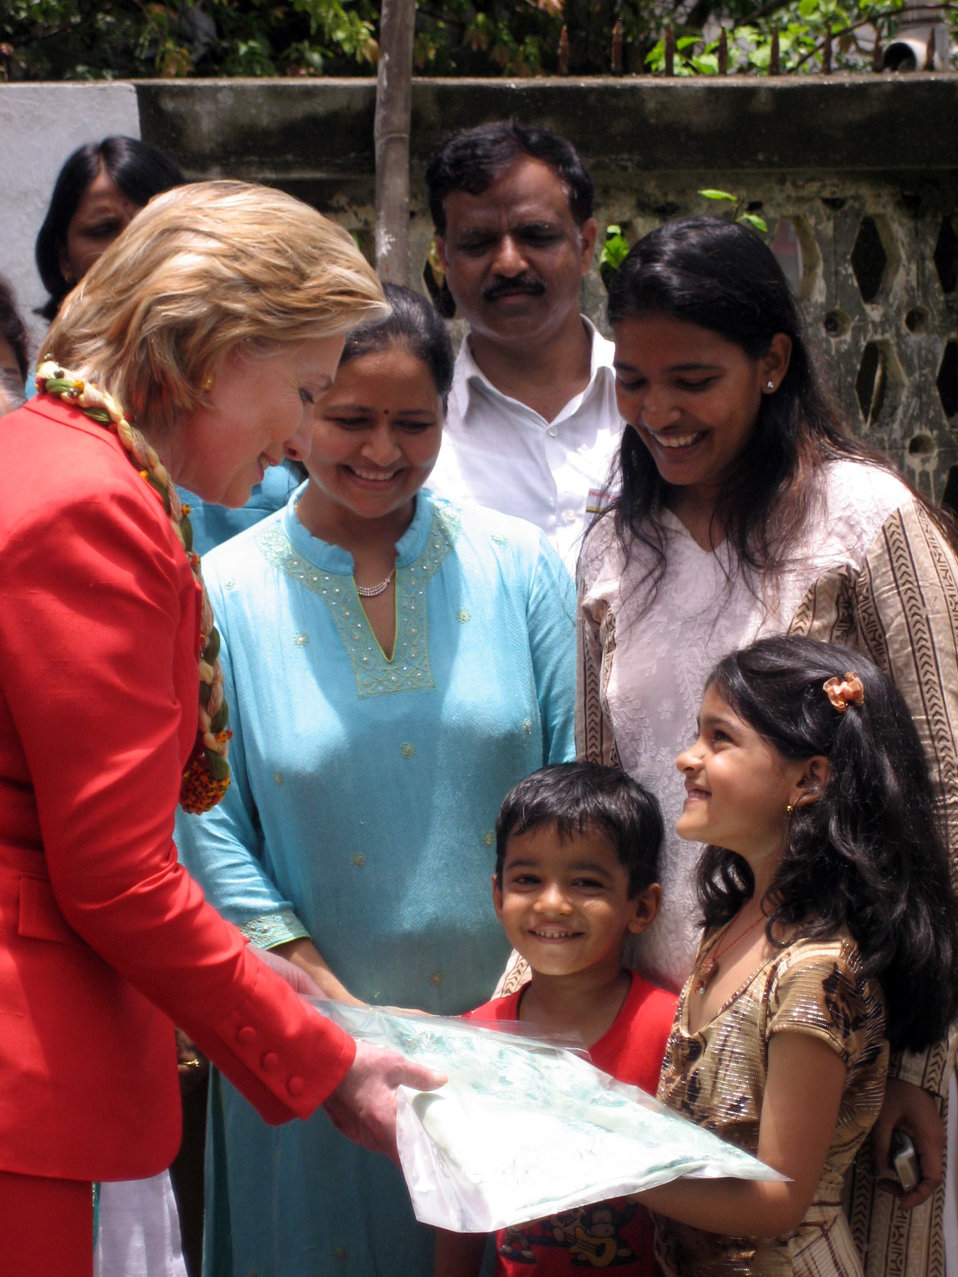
Secretary Clinton Visits SEWA Hansiba Outlet

Sonal Mehta and 2 children present a gift (a decorative Indian shawl) to U.S. Secretary of State Hillary Rodham Clinton in Mumbai, India July 18, 2009.